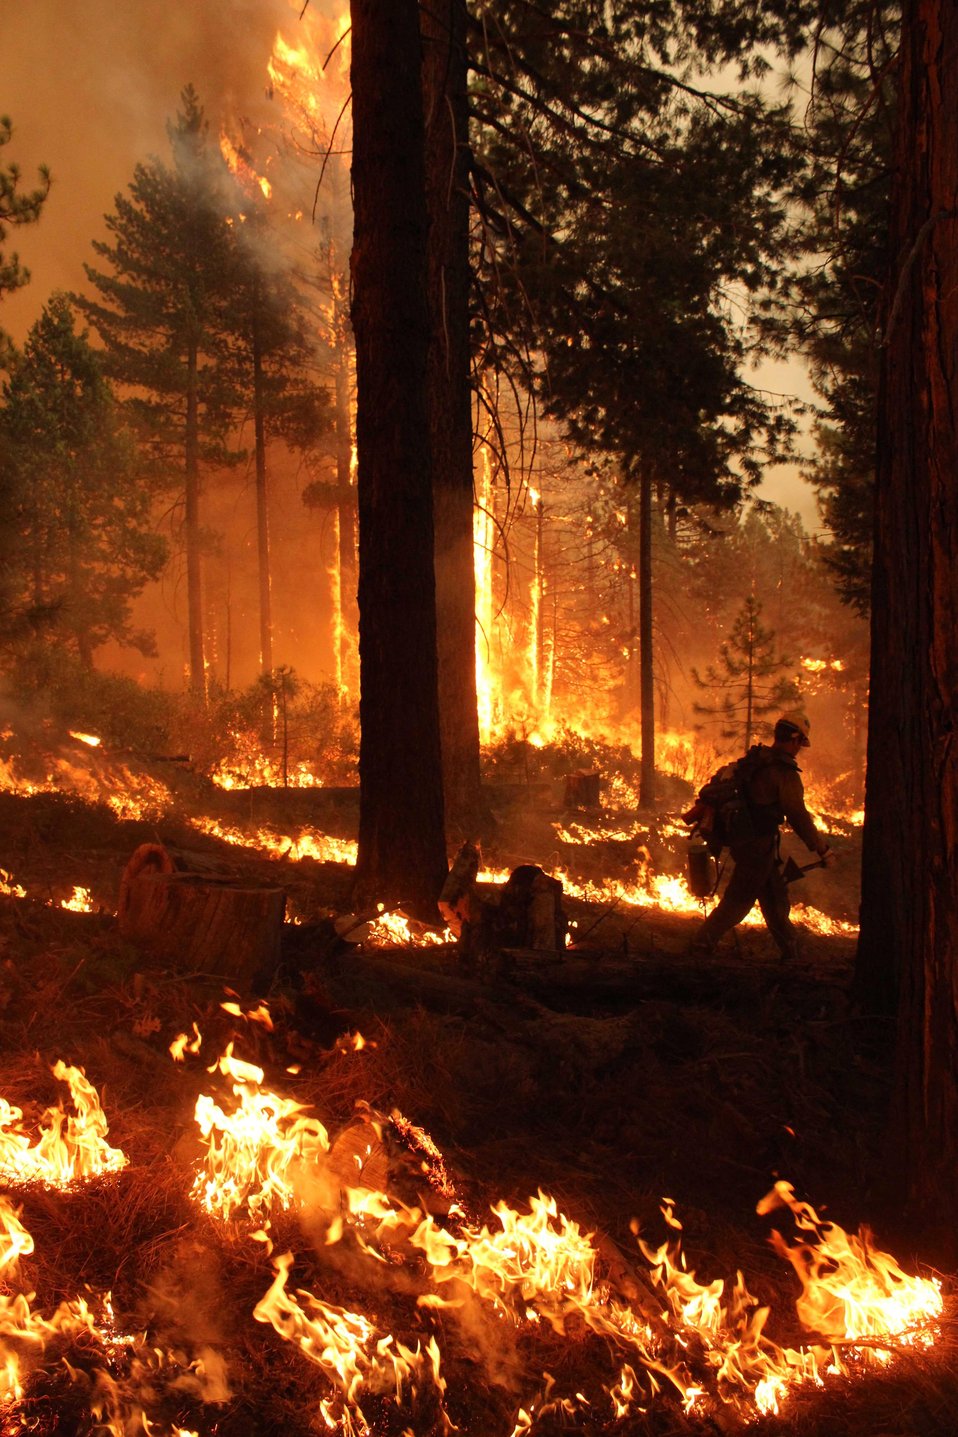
The Rim Fire in the Stanislaus National Forest near in California began on Aug. 17, 2013 and is under investigation. The fire has consumed approximately 235,841 acres and is 70% contained.